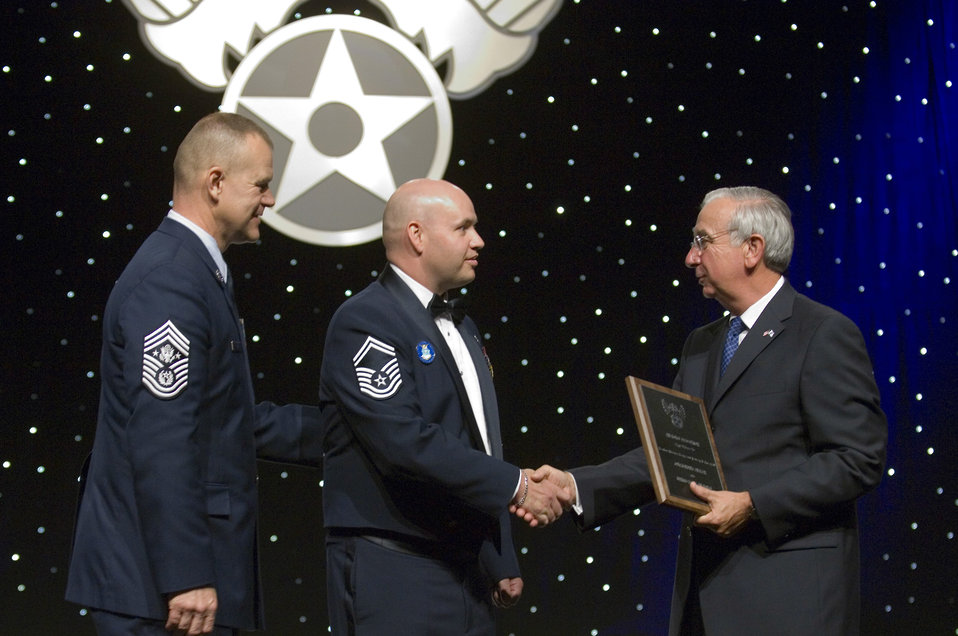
Air Force officials recognize 12 Outstanding Airmen of Year

Senior Master Sgt. Jeffery Steagall receives an award Sept. 14, 2009, from Chief Master Sgt. of the Air Force James A. Roy and AFA Chairman of the Board Joseph E. Sutter during the 2009 Outstanding Airmen of the Year dinner at the Gaylord National Hotel and Convention Center, National Harbor, Md. Sergeant Steagall is a communications and information systems inspections manager assigned to Peterson Air Force Base, Colo. Sergeant Steagall is one of the twelve Outstanding Airmen of the Year.